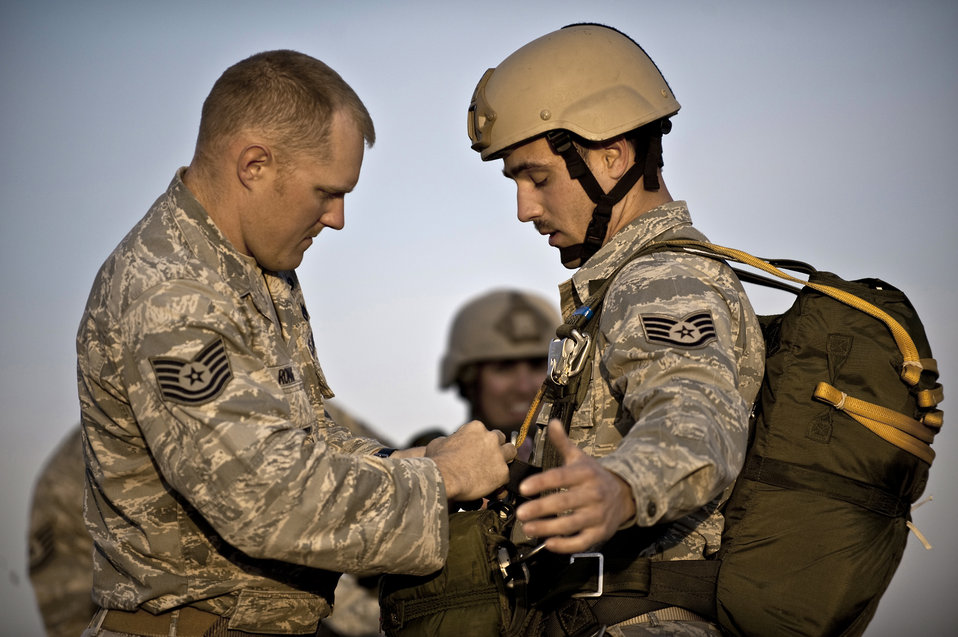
Airmen and Soldiers conduct airdrop and sling-load training

Tech. Sgt. Mitchell Romag inspects Staff Sgt. Jeremy Lowe's parachute before a training jump April 15, 2011, as part of airdrop and sling-load training at Nellis Air Force Base, Nev. Sergeant Romag is an airborne pavements and equipment operator, and Sergeant Lowe is an airborne vehicle maintenance craftsman. Both NCOs are assigned to the 820th RED HORSE Squadron.